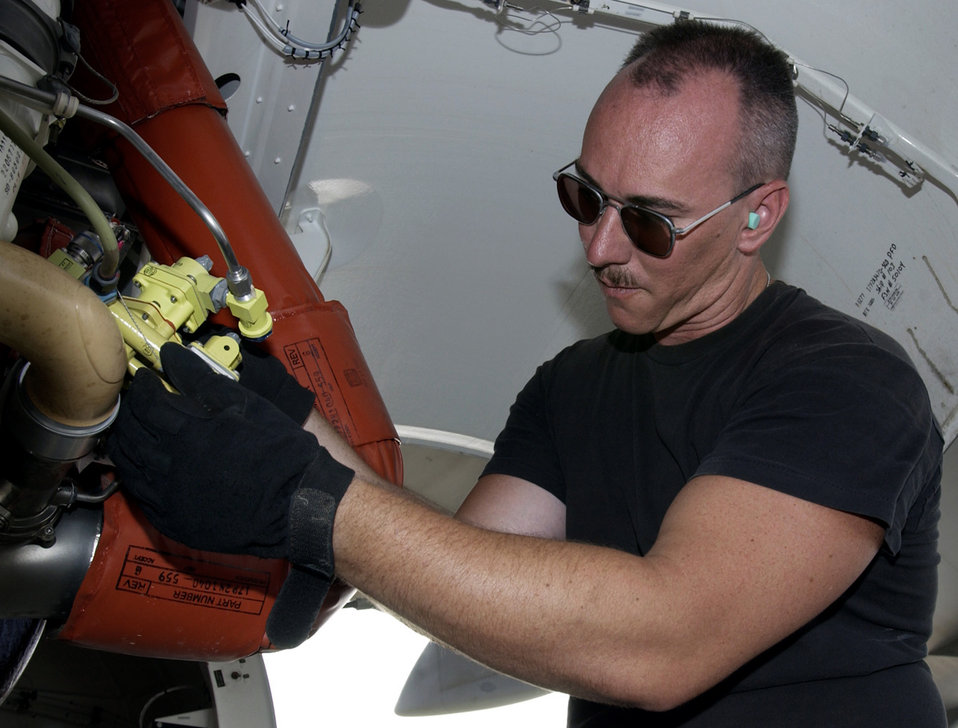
Moving mountains

SOUTHWEST ASIA -- Tech. Sgt. J.J. Saffell works on a C-17 Globemaster III air-conditioning pack. The 8th Expeditionary Air Mobility Squadron Airmen handle about 1,900 aircraft missions monthly. Sergeant Saffell is assigned to the strategic maintenance section and is deployed from McChord Air Force Base, Wash.